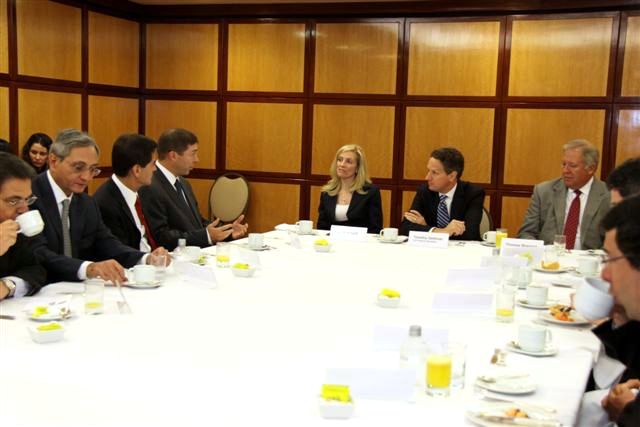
Secretary Geithner Travels to Brazil, 02/07/2011

On Monday, February 7, 2011, Secretary Geithner met with local business leaders and economists in Sao Paulo to discuss Brazil's economic and financial outlook as well as the state of the U.S. economy.